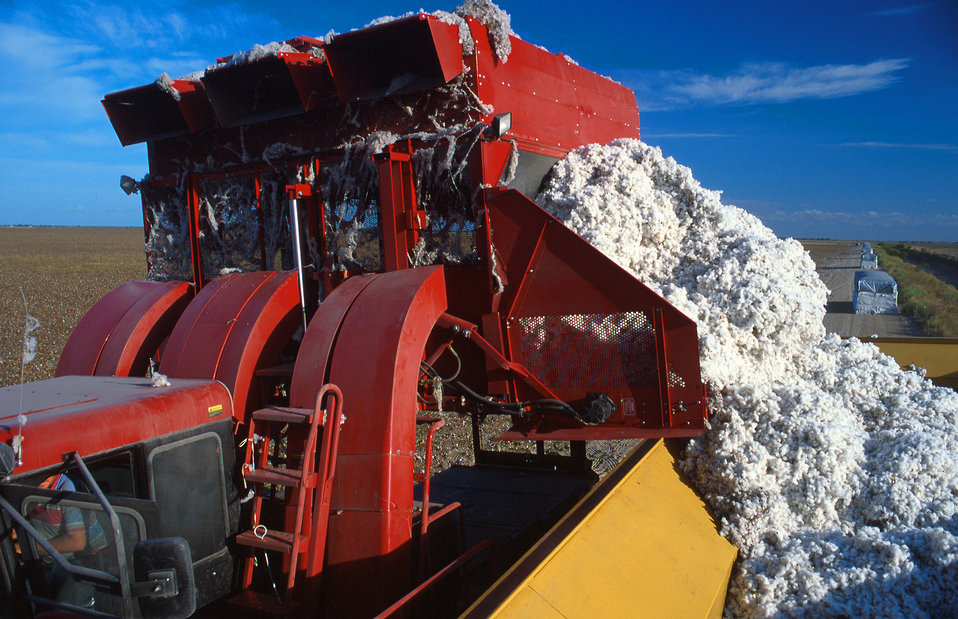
Cotton is harvested in Texas.